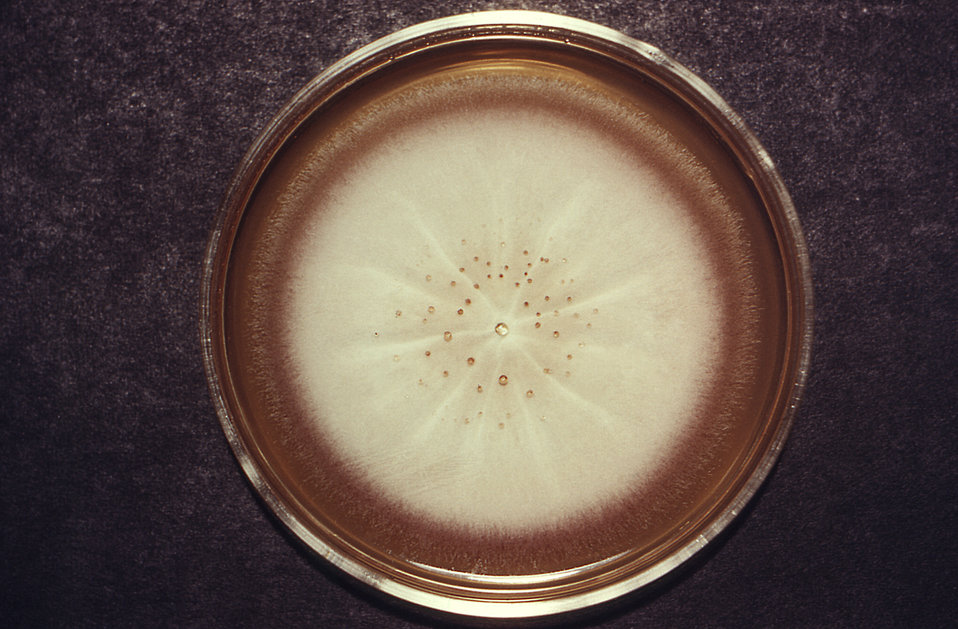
This image depicts a Petri dish containing an agar growth medium, atop which a single large anthropophilic colony of Trychophyton megninii, strain A-424, fungal organisms had taken shape. This dermatophyte causes fungal infections in humans involving the skin, hair, and nails. This colony exhibited its characteristic glabrous (smooth), slightly-ruffled surface, and an off-white to beige coloration. See PHIL 14950, for the appearance of a T. megninii fungal cology viewed from the reverse side of a Petri dish culture.